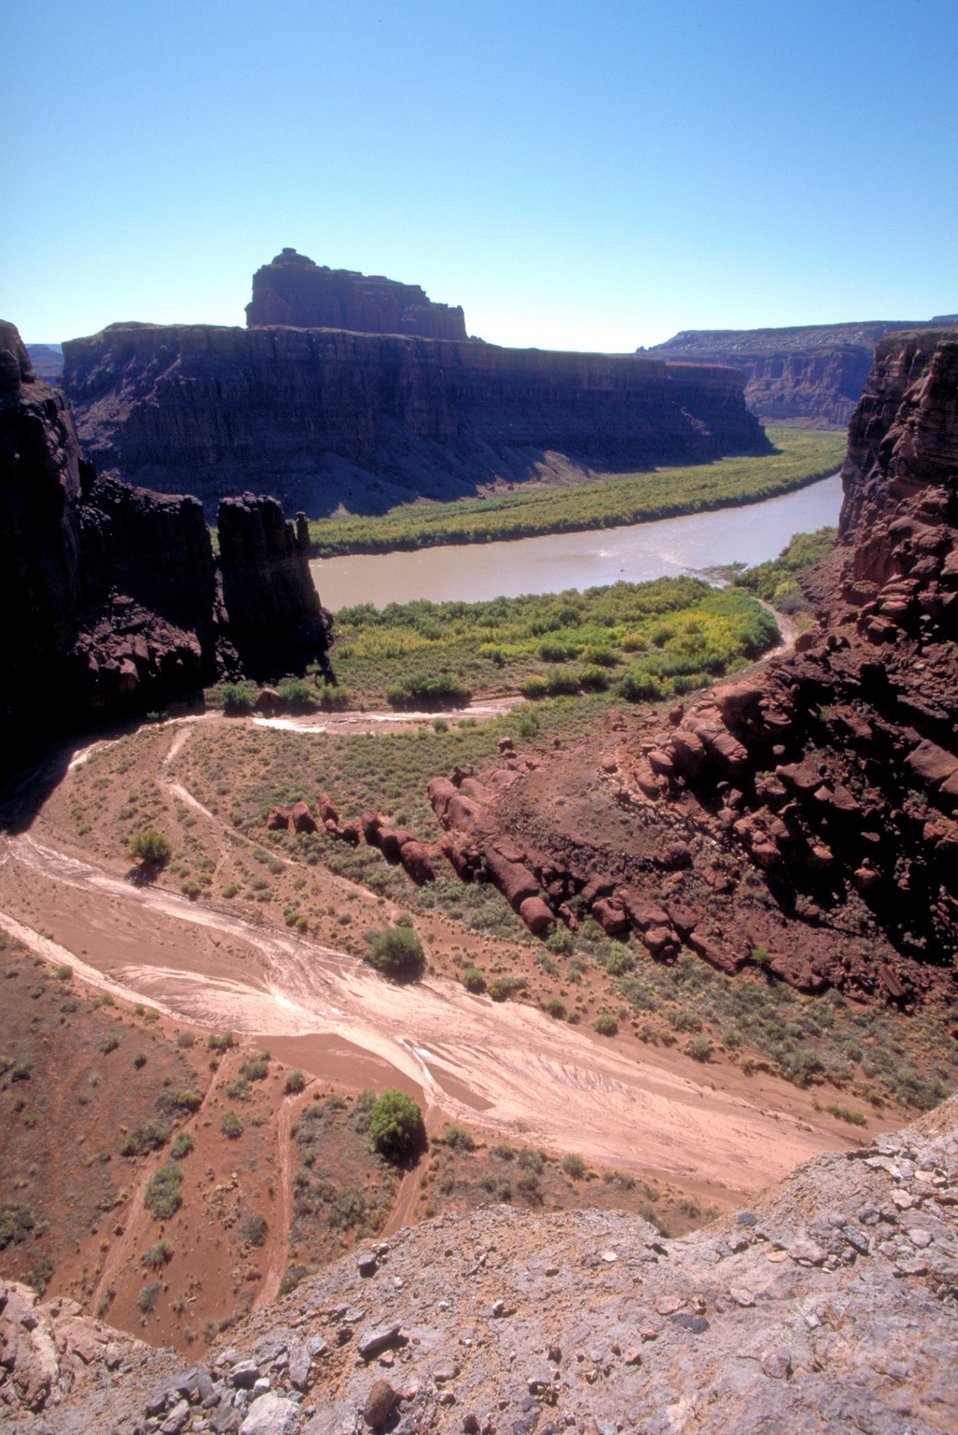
Colorado River near Moab, Utah.